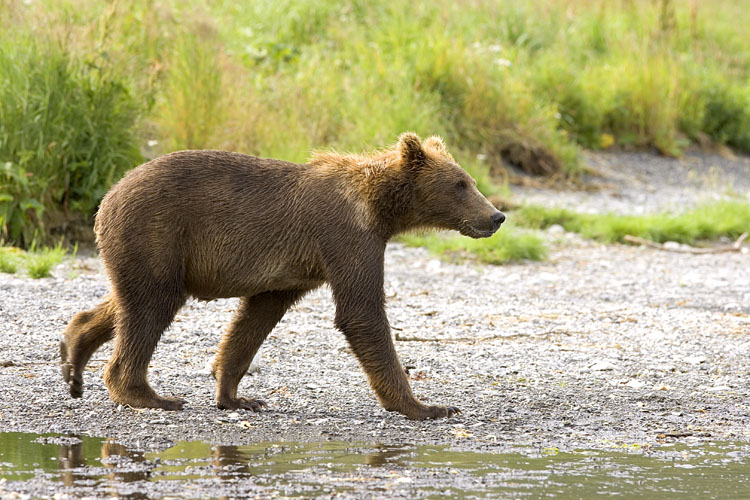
KOD Hildebrand (5)

Kodiak National Wildlife Refuge- Wildlife